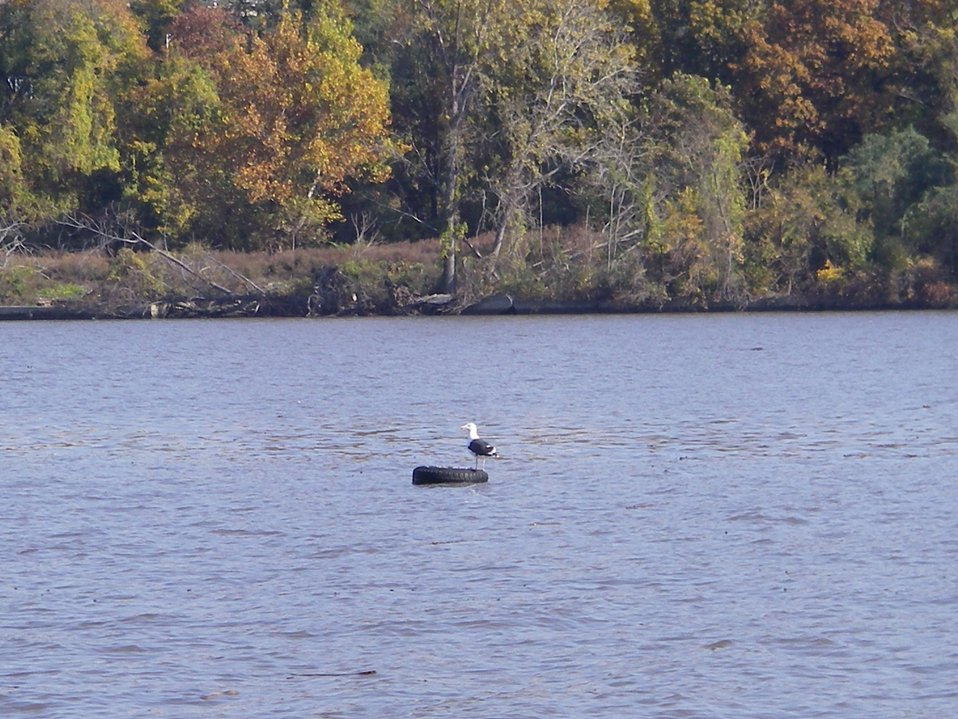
Seagull riding a tire down the Hudson River